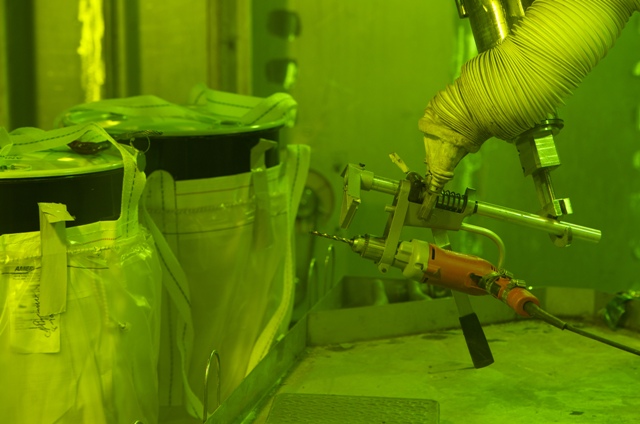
Recovery Act Accelerates Idaho Site Cleanup, Leads to Numerous Accomplishments

Remote manipulators are used to repackage waste inside a hot cell.